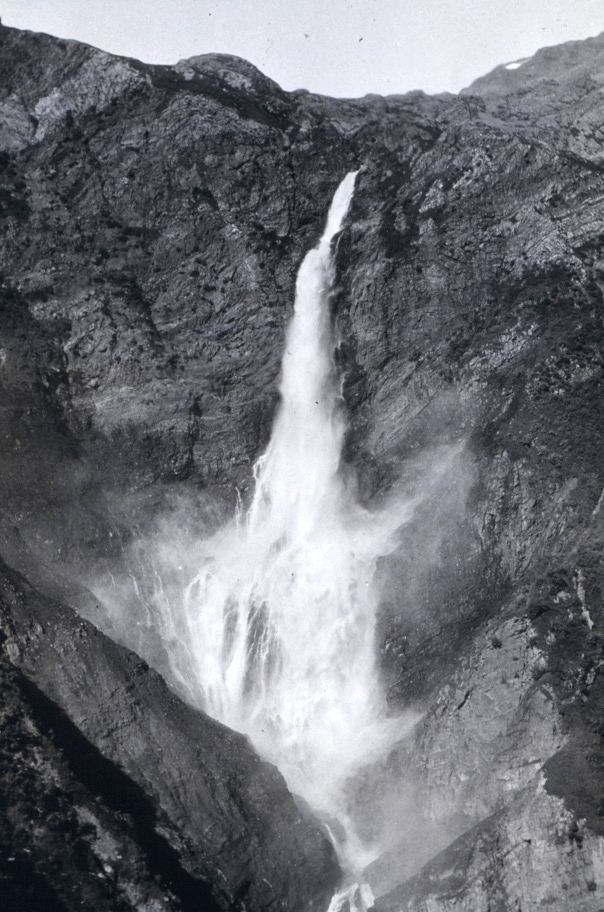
Unnamed Falls